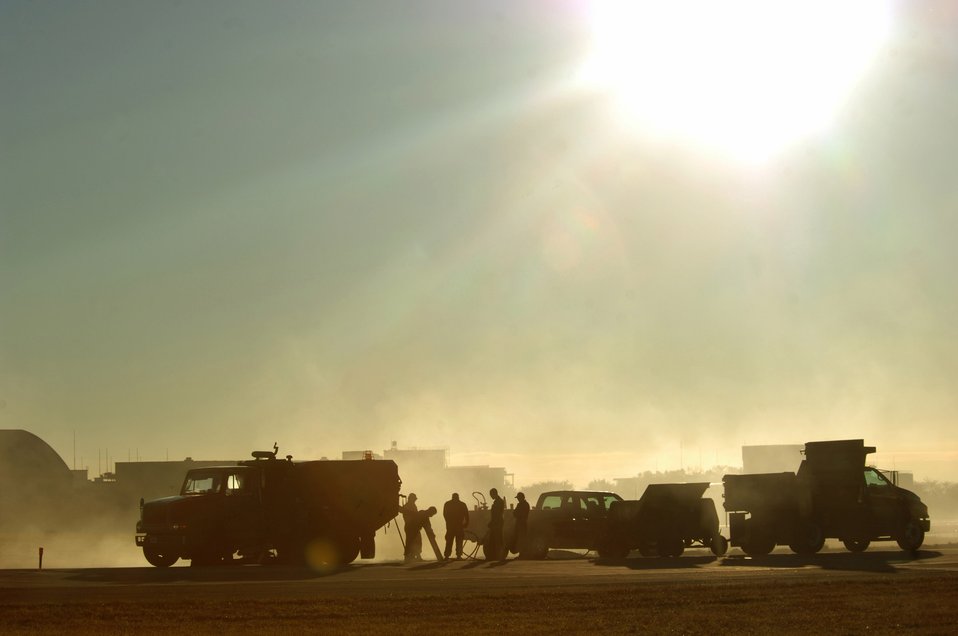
Morning inspection

YOKOTA AIR BASE, Japan (AFPN) -- Airmen conduct an early-morning inspection on the flightline. They are trained to deploy into bare-base locations, assess airfield capabilities, prepare aircraft landing areas, clear obstacles, install emergency airfield lighting systems and repair airfield damage. The Airmen are members of the 374th Civil Engineer Squadron.